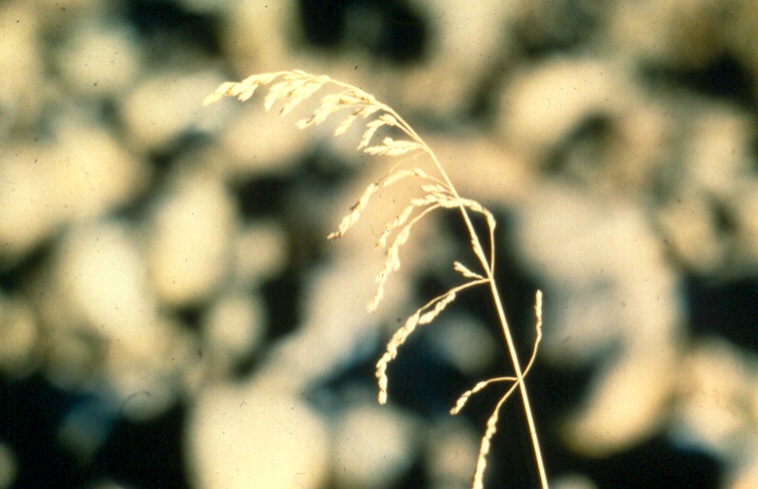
Poa Salmon FIeld Office UCSC Upper Columbia Salmon Clearwater District